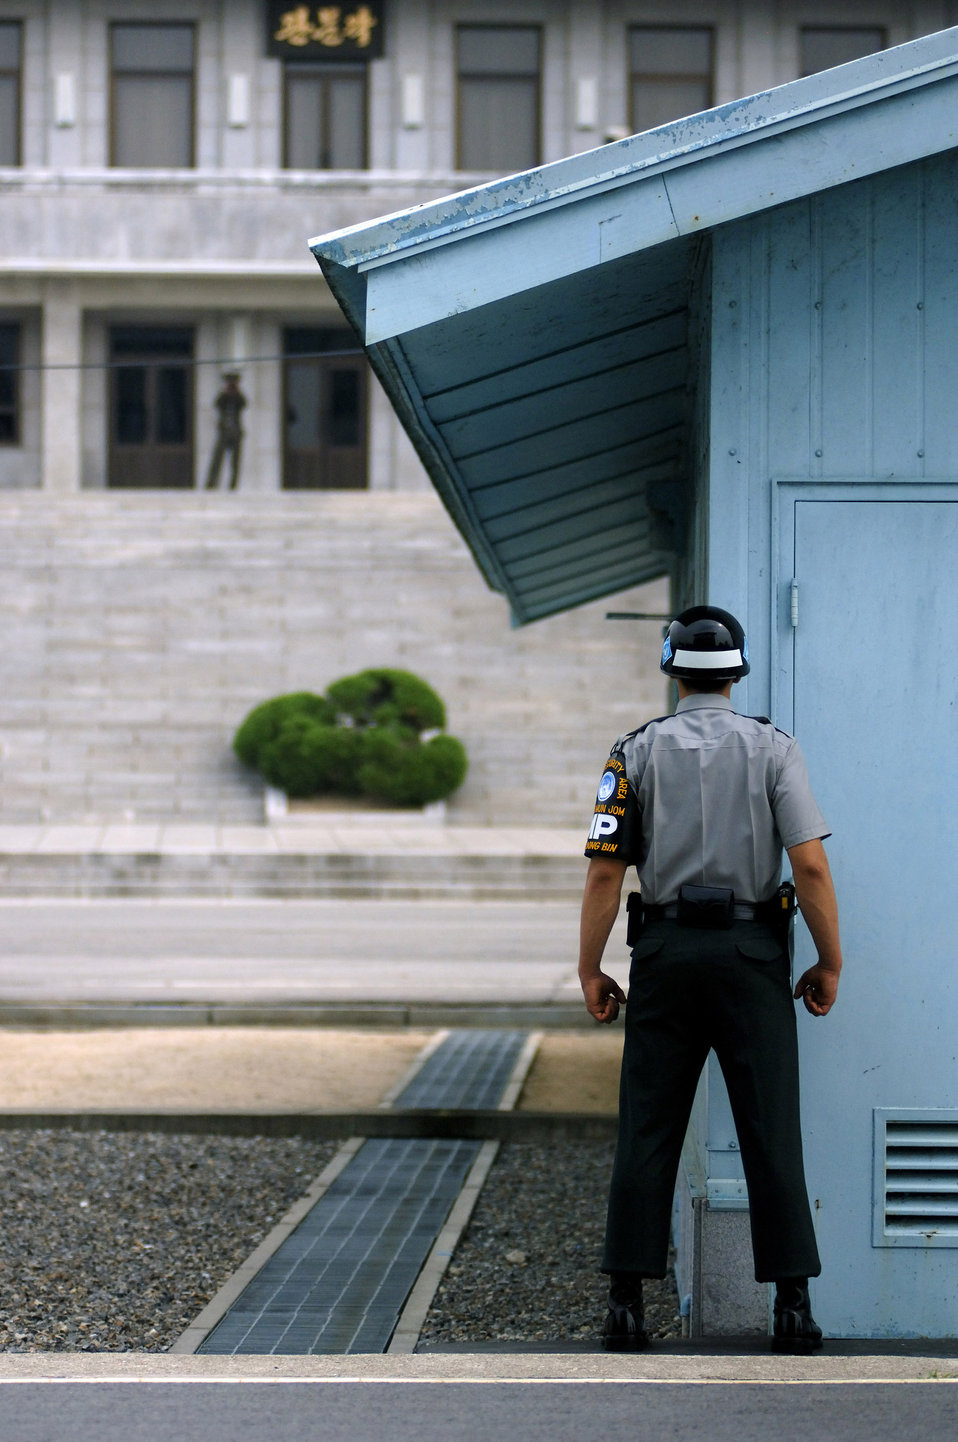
Korean War veterans leading different lives reunite

A South Korean military policeman stands guard inside the Korean Demilitarized Zone during a Sept. 13 tour held to honor Korean War veterans in Panmunjeom, South Korea. The joint security area is the only place where North and South Korea connect. Air Force Korean War veterans are visiting South Korea during a weeklong tour in observance of the Air Force's 60th Anniversary.